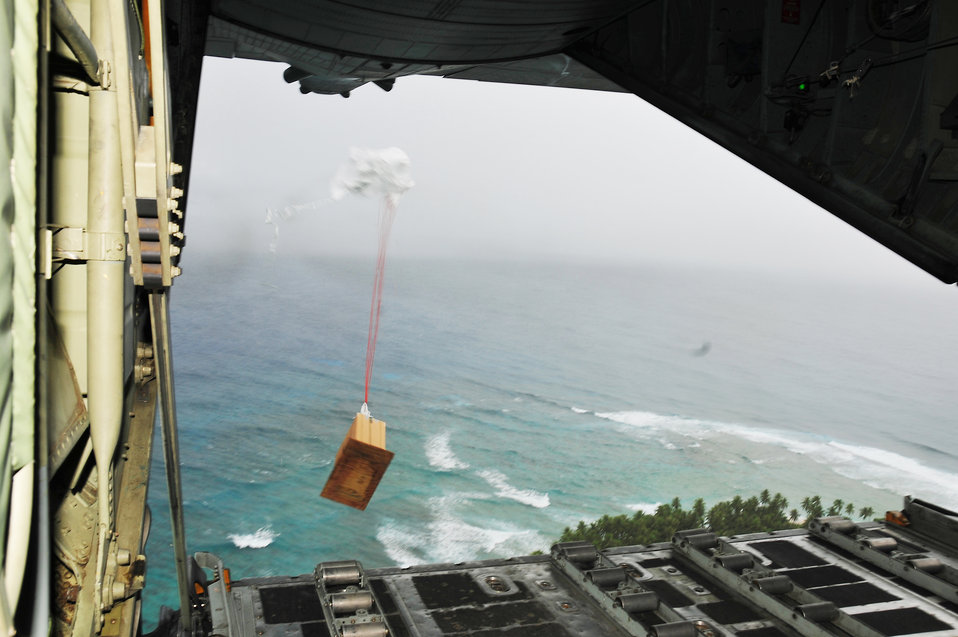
Airmen drop donated goods to islanders

A bundle of donated goods heads for a Chuuk island during Operation Christmas Drop Dec. 16, 2009.